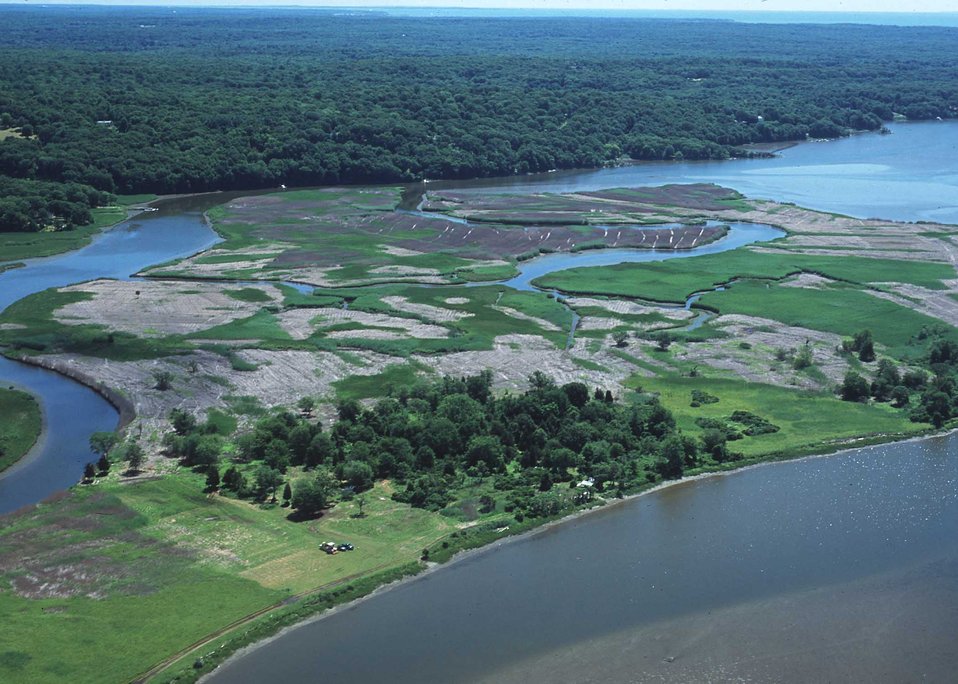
Connecticut River tideland habitat undergoing invasive plant control (light colored areas) and native plant community restoration.